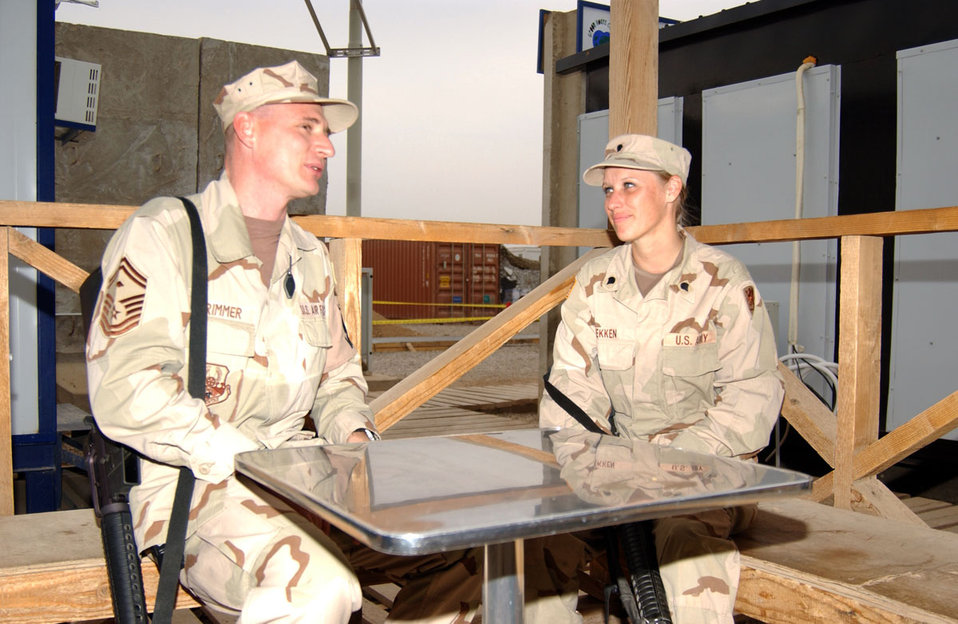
Uncle, niece serving together in Iraq

BALAD AIR BASE, Iraq (AFPN) -- Senior Master Sgt. Michael Brimmer and his niece, Army Spc. Angie Fekken, relax during some down time. Sergeant Brimmer is assigned to the 332nd Expeditionary Security Forces Squadron and Specialist Fekken is assigned to the 1436th Engineer Company.